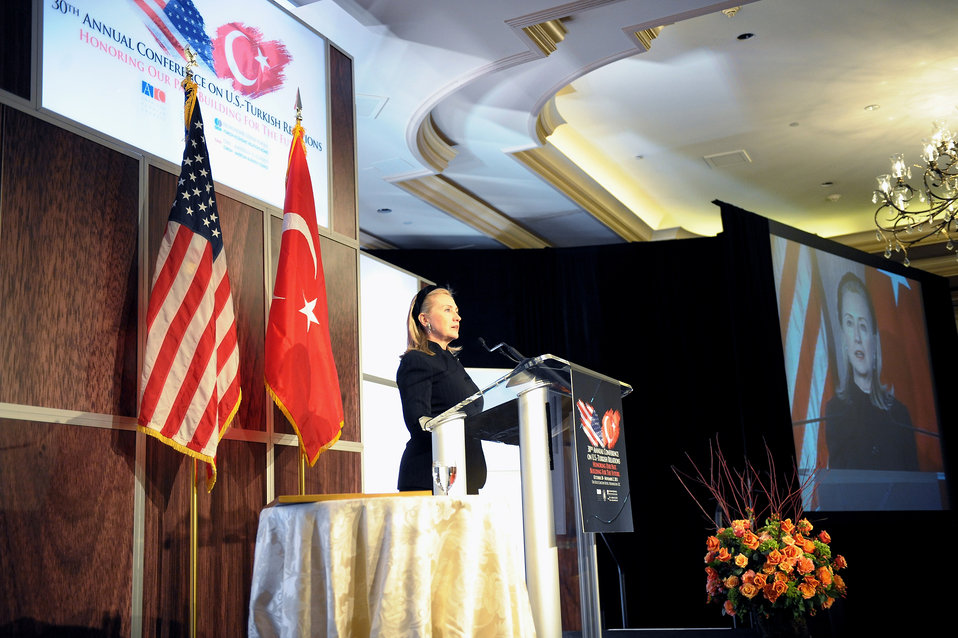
Secretary Clinton Delivers Remarks at 2011 Annual Conference on U.S.-Turkey Relations

U.S. Secretary of State Hillary Rodham Clinton delivers keynote remarks at the 2011 Annual Conference on U.S.-Turkey Relations, hosted by the American-Turkish Council, in Washington, D.C., on October 31, 2011.